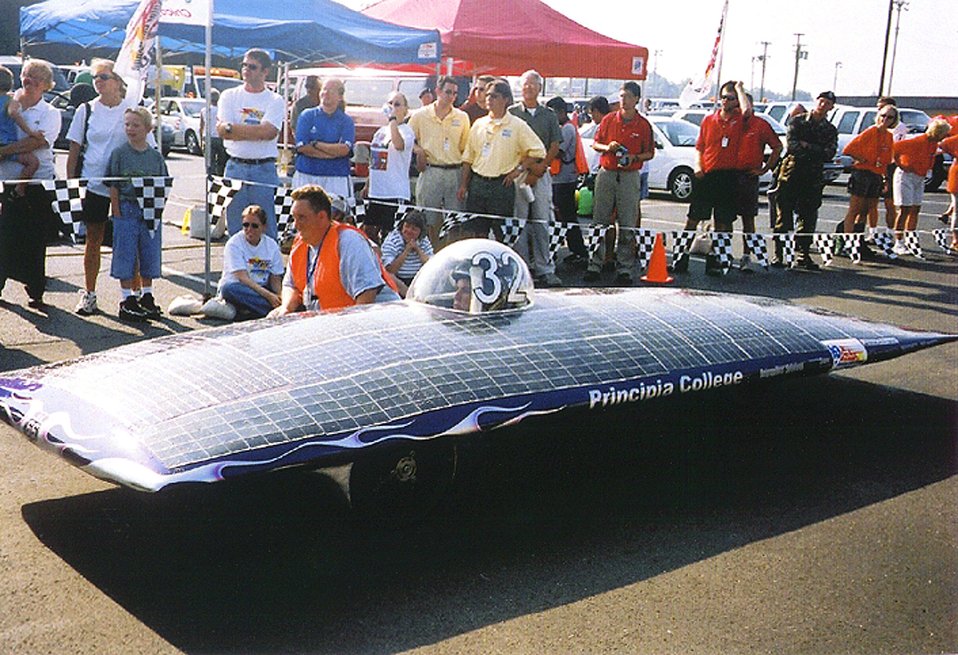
THE SOLAR CAR ENTRY FROM PRINCIPAL COLLEGE IN ILLINOIS.

THE AMERICAN SOLAR CHALLENGE (SUNRAYCE) 2001, THE LONGEST SOLAR CAR RACE IN THE WORLD, IS A BIENNIAL EDUCATIONAL SPORTING EVENT IN WHICH UNIVERSITY TEAMS, COMPANIES, AND CLUBS FROM AROUND THE WORLD COMPETE TO BUILD AND RACE SOLAR POWERED CARS ACROSS THE UNITED STATES. THIS YEAR THE RACE BEGAN IN CHICAGO, ILLINOIS ON JULY 15, 2001 AND WAS COMPLETED ON JULY 25, 2001 IN CLAREMONT, CALIFORNIA, TRAVELING ALL ALONG OLD ROUTE 66.